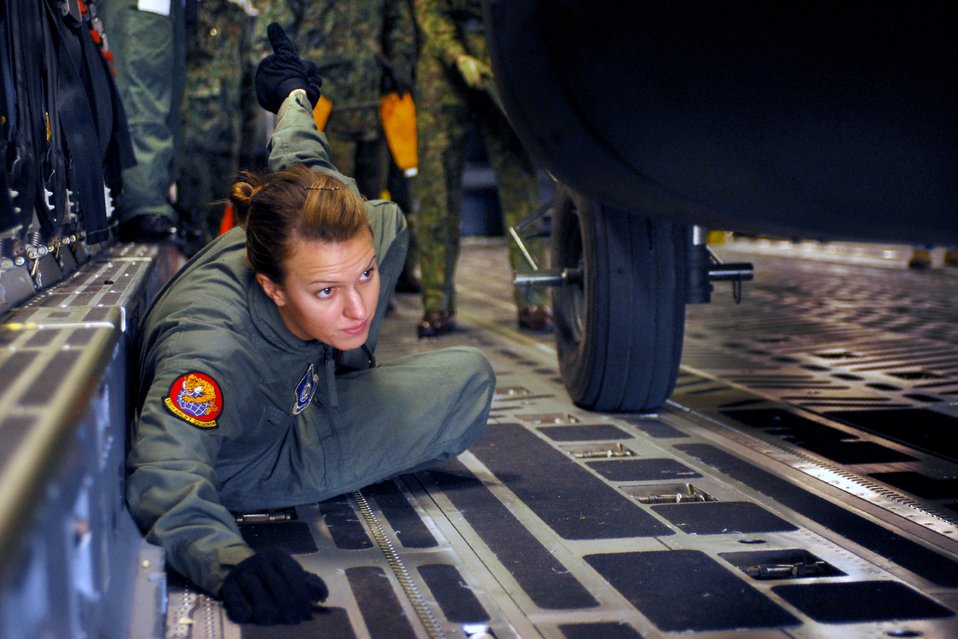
Airmen load Japanese helicopter into U.S. plane

Senior Airman Lisa Long directs the loading of a Japan Ground Self Defense Force CH-47J Chinook onto a C-17 Globemaster III cargo plane Feb. 23 at Yokota Air Base, Japan. The demonstration was conducted during the Pacific Global Air Mobility Seminar held Feb. 22 and 23. The CH-47J is assigned to the 1st Helicopter Brigade at JGSDF Camp Kisarazu in Kisarazu City, Chiba Prefecture. Airman Long is a loadmaster assigned to the 535th Airlift Squadron at Hickam Air Force Base, Hawaii. The C-17 is also assigned to the 535th Airlift Squadron.